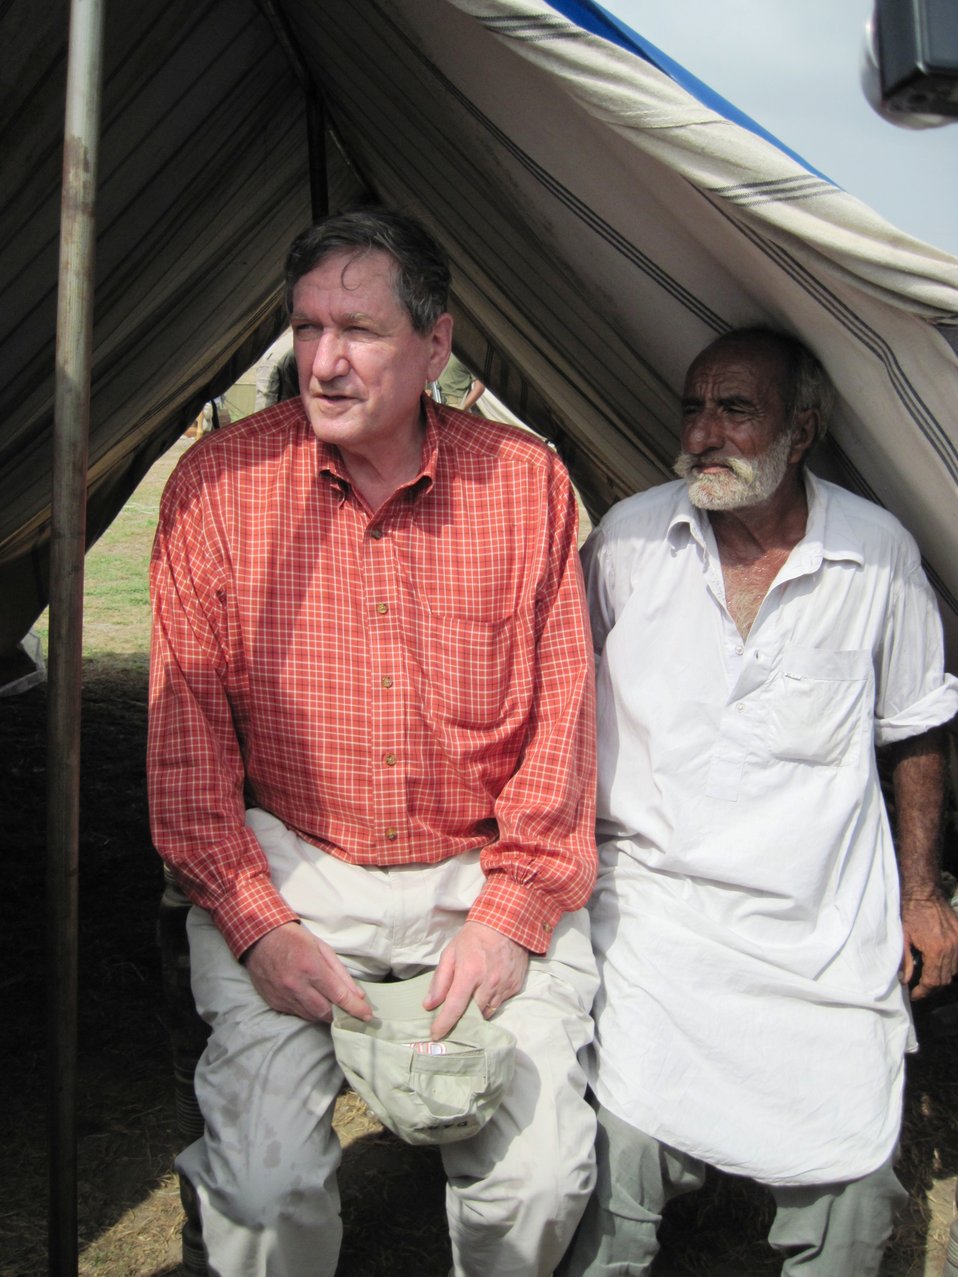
Special Representative Holbrooke Speaks With a Man From Sujuwal

U.S. Special Representative to Afghanistan and Pakistan Richard C. Holbrooke speaks with a man from Sujuwal, Thatta District, living in the Makli Cricket Stadium Army IDP Camp in Thatta, Pakistan. State Department photo/ Public Domain]